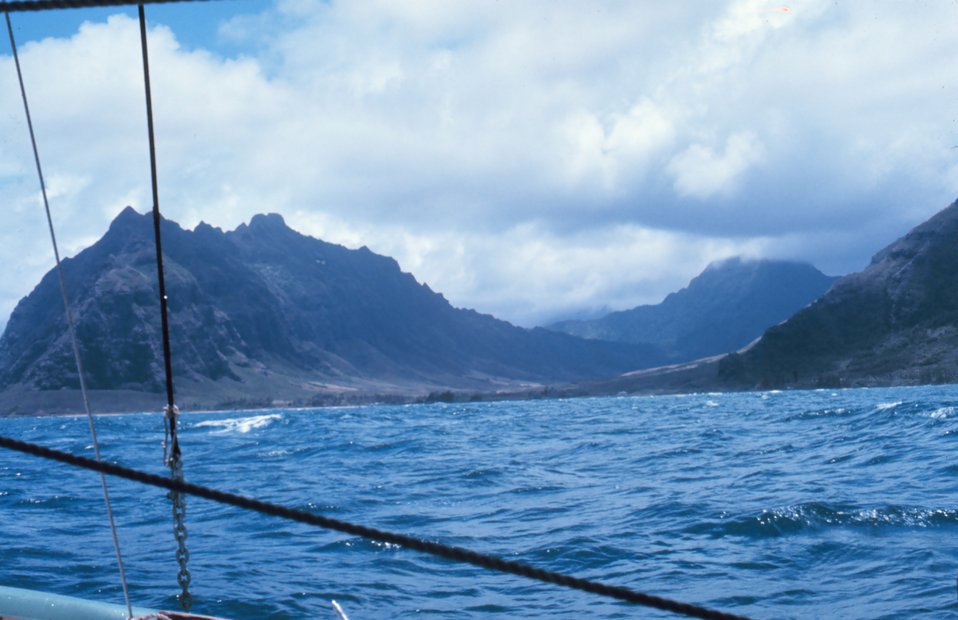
West coast south of Kaena Point